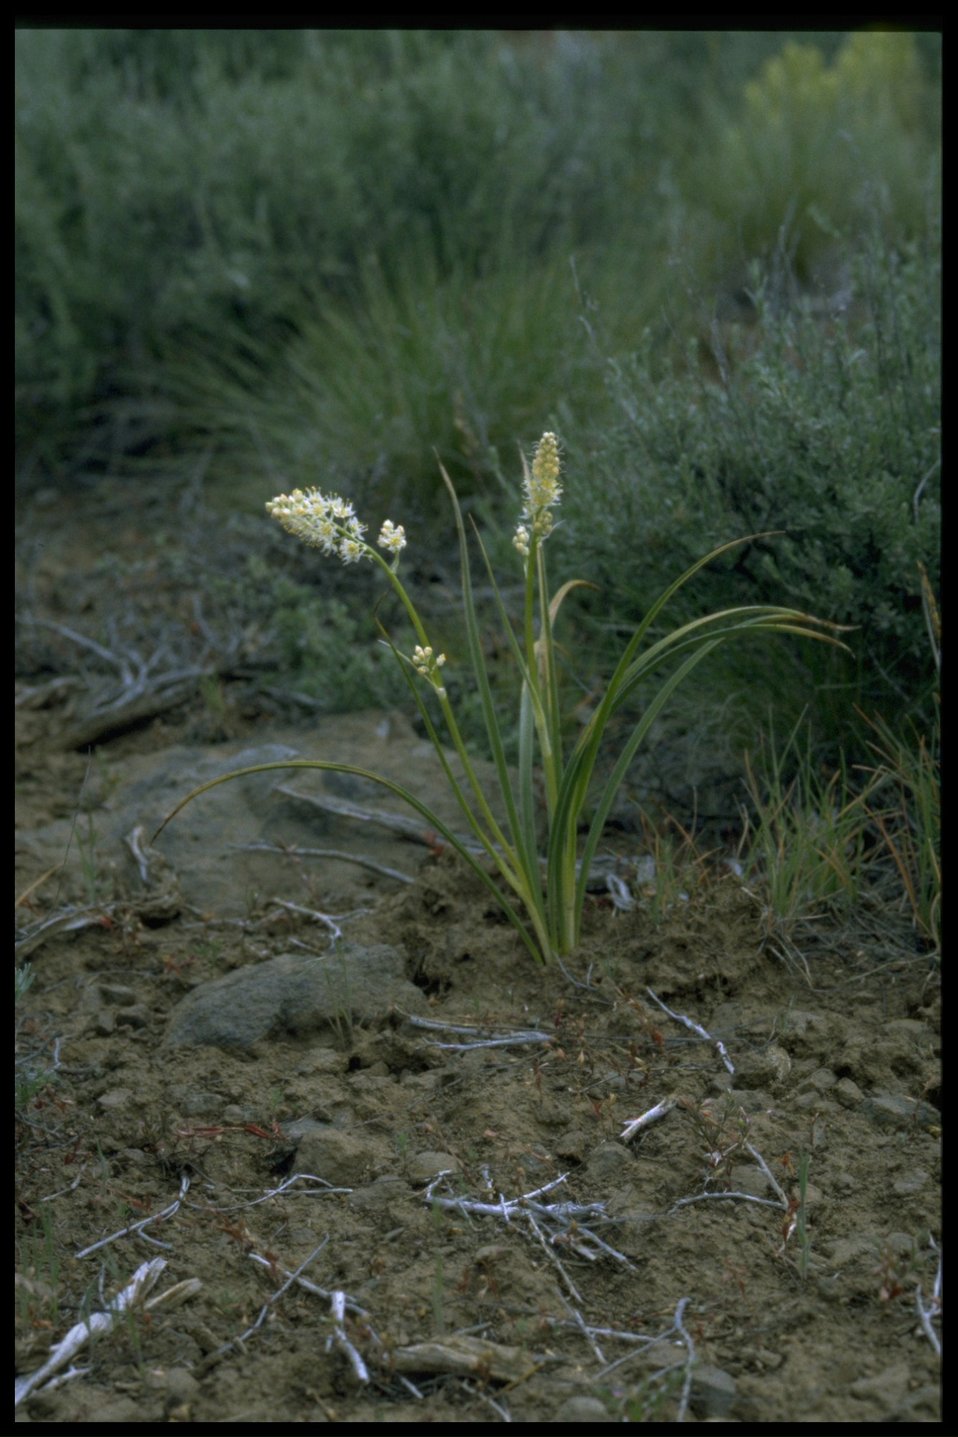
Farshot of meadow deathcamas (Zigadenus venenosus).